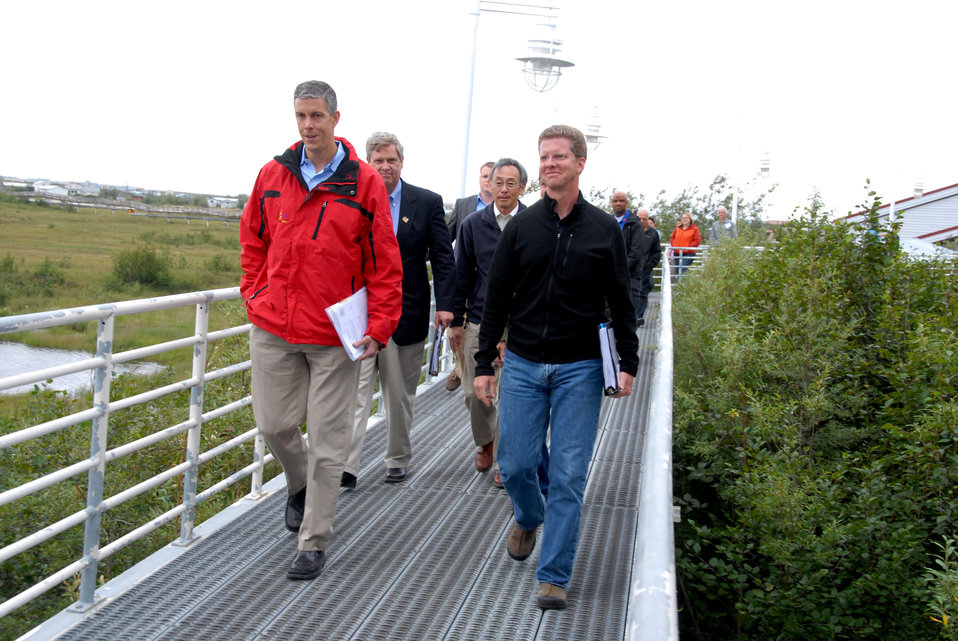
Rural Tour 0029

Rural Tour Alaska Aug 2009